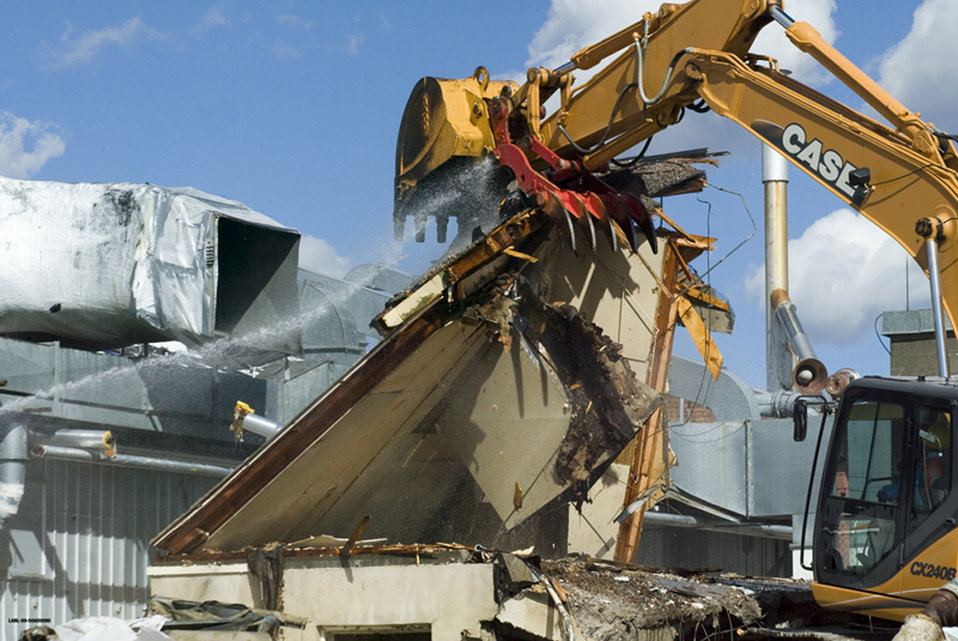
LANL - Building 21-166 demolition

The final wall of Building 21-166, which encompassed about 1,300 square feet, was demolished in mid-October 2009.